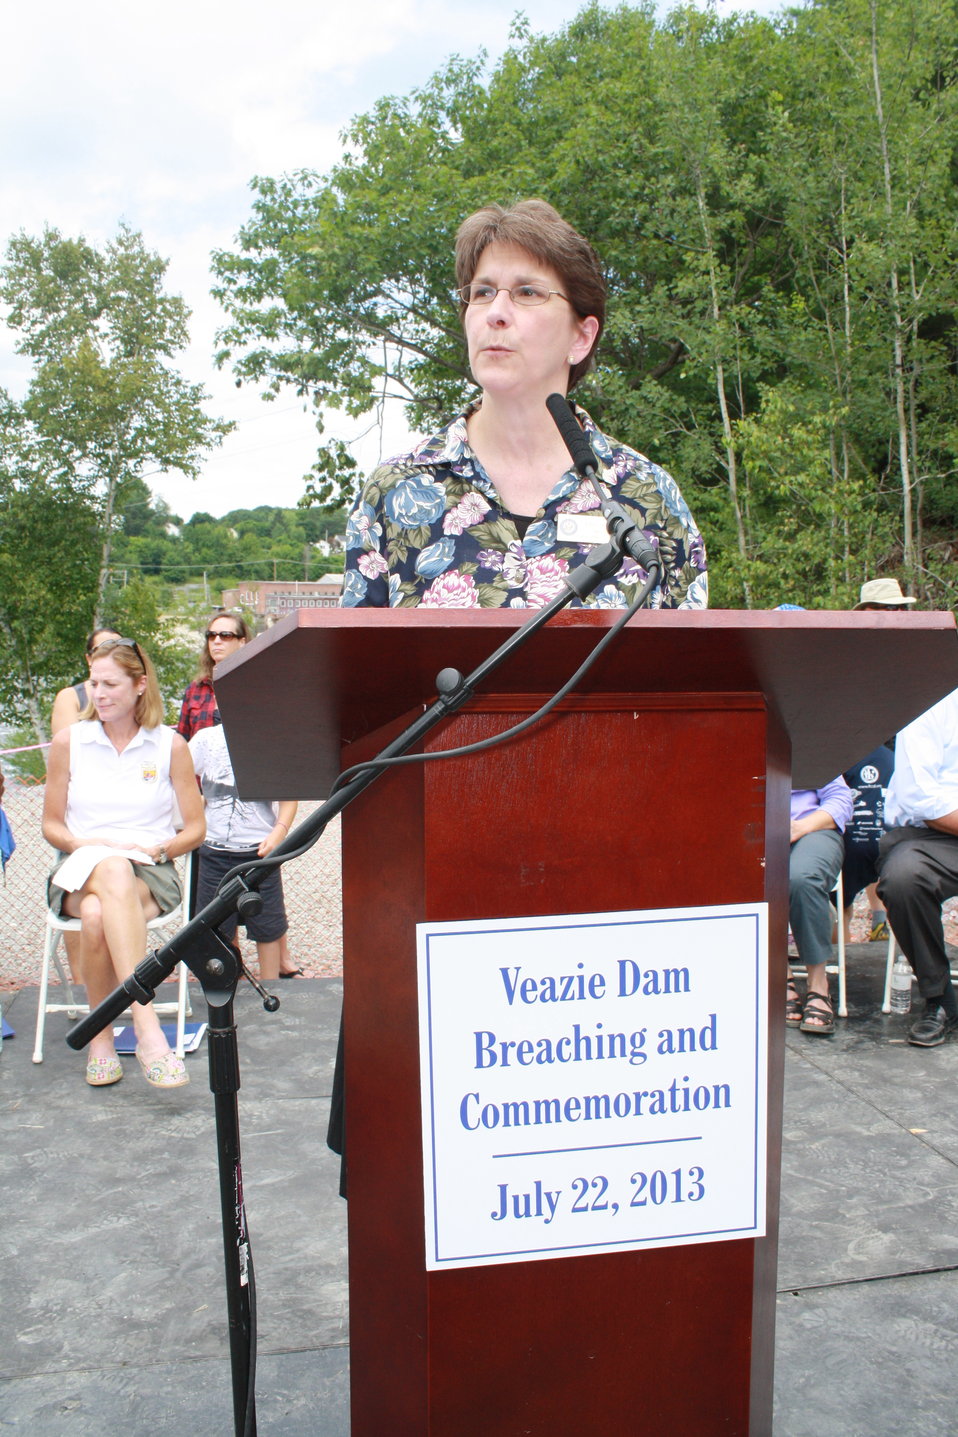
Veazie Dam Removal

Edie Smith from the office of Senator Angus King.